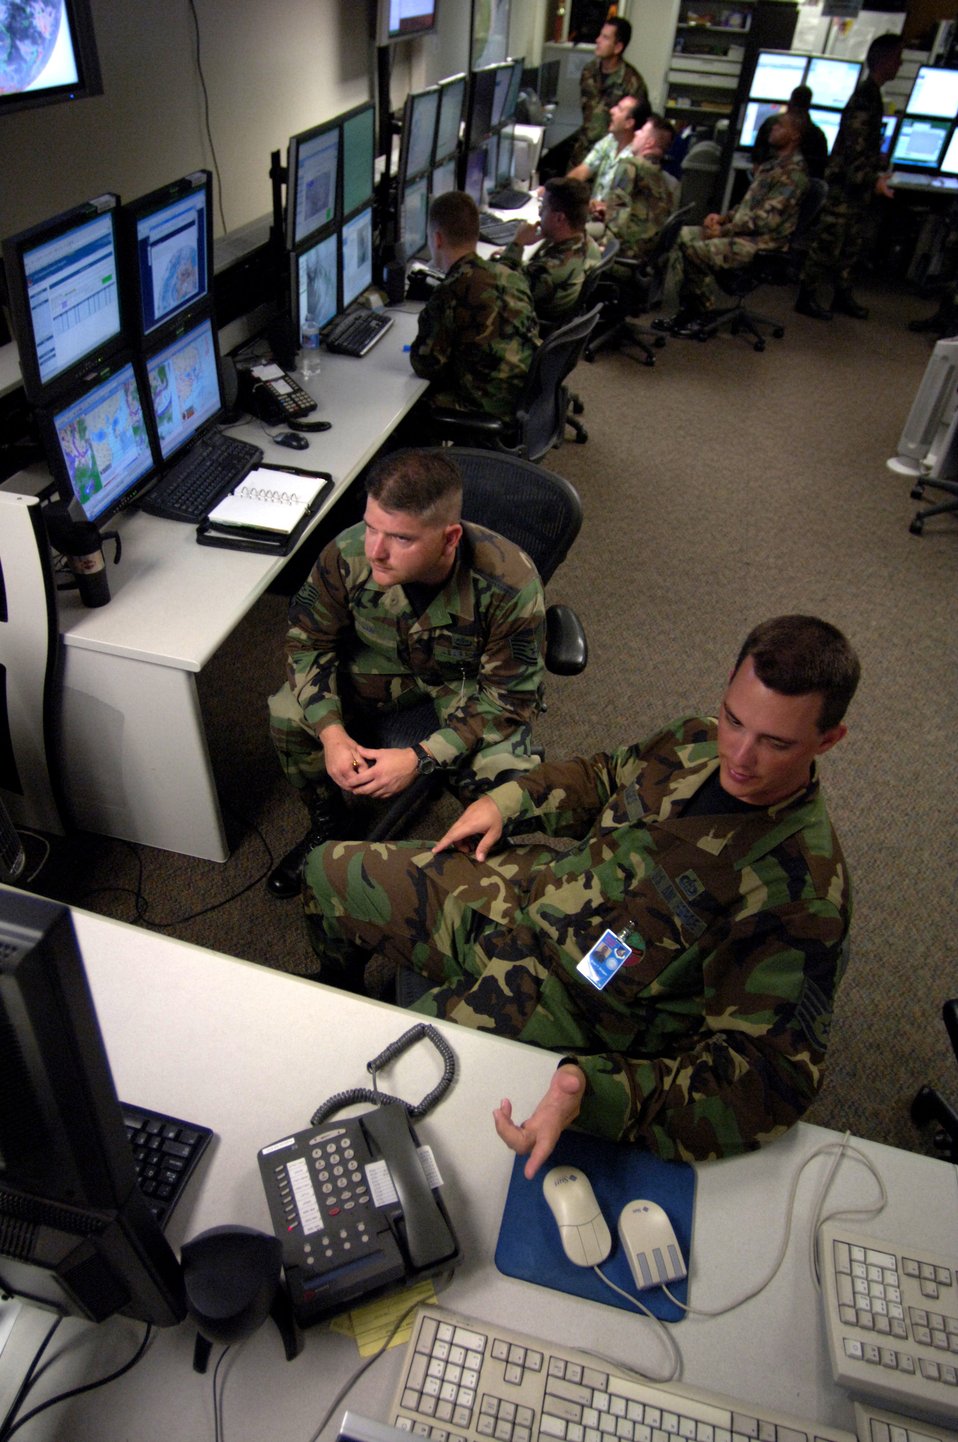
Weather squadrons complete merger

Staff Sgt. Brian Bridges and Tech. Sgt. Gary Lam discuss thunderstorms around Kadena Air Base, Japan, on the operations floor Tuesday, April 18, 2006, at Hickam Air Force Base, Hawaii. Sergeants Bridges and Lam are weather forecasters with the 17th Operational Weather Squadron, which provides Pacific Air Forces with tailored operational forecasts.